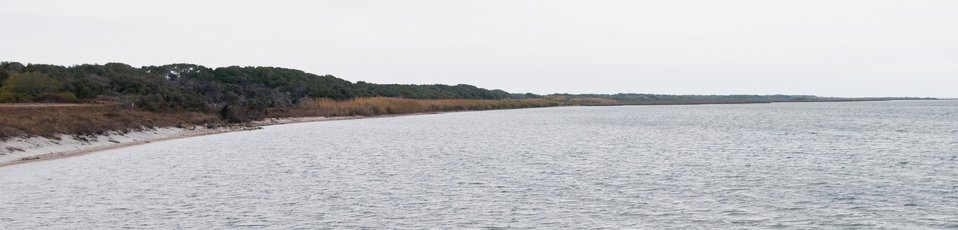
San Antonio Bay is the primary body of water for the Aransas National Wildlife Refuge, in Austwell, TX on Friday, December 16, 2011. Typical of a coastal prairie shoreline, Phragmites reed grass helps stabilize the shore.
State Conservationist Salvador Salinas commented on the USDA-NRCS Gulf of Mexico Initiative (GoMI) during a press conference, about improving water quality, habitat, and the health of the Gulf ecosystem. “Launching this initiative is a top priority for NRCS in Texas because the Gulf of Mexico is one of our state’s premier natural resources. It provides vital habitat for wildlife, and creates jobs in industries that depend upon them. The health of this resource is essential to Texas as well as to the nation,” said Salvador Salinas. The Texas initiative focuses on three watersheds in Refugio, Calhoun, Victoria and Aransas counties and ultimately the Gulf of Mexico.
“What is really compelling about GoMI and other similar conservation efforts is that they prove that Texas farmers and ranchers not only feed and clothe us and power our vehicles, but they can also help protect and restore our rivers and provide more habitat for wildlife,” stated Salinas. “That’s why it is important that this conservation project is not about taking productive farm land out of production. This is a working lands initiative, so that not only are we helping to restore the health of the Gulf, but we’re also helping to sustain and enhance the productivity of the Gulf’s farms and ranches.”
Nationally, USDA-NRCS is dedicating up to $50 million over three years to this effort.
NRCS will continue to provide proven technical expertise and that of their partners. The anticipated result is improved water quality, stream flows and wildlife habitat.